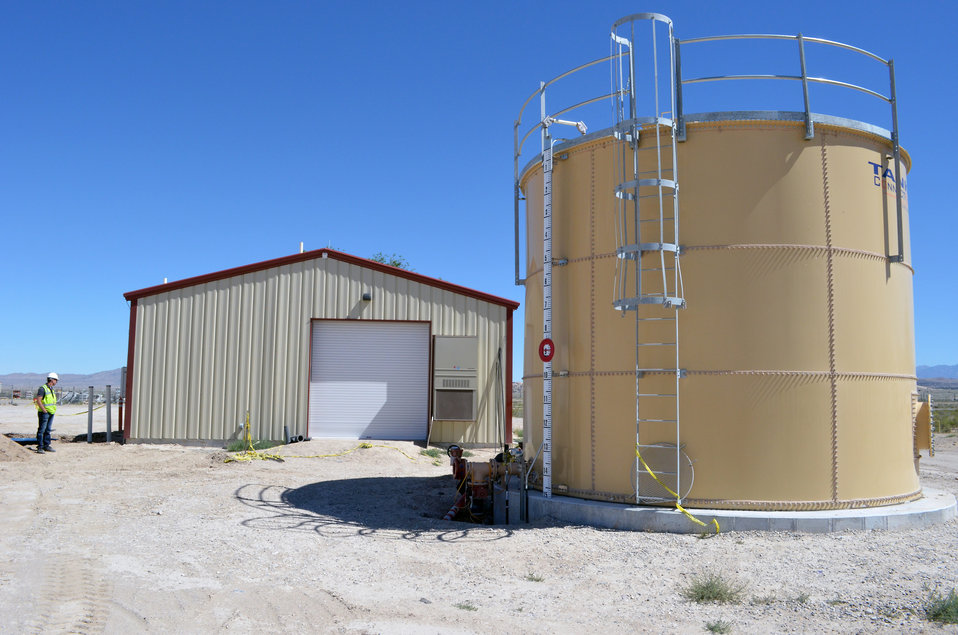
Water system project continues at Dugway Proving Grounds

A view of the new treatment plant building and storage tank for a potable water system at Dugway Proving Grounds, Utah, shown June 21, 2012. The U.S. Army Corps of Engineers Sacramento District oversaw construction of the building, as well as the replacement of water lines, fire hydrants and the construction of a new looped water line arrangement at the post.